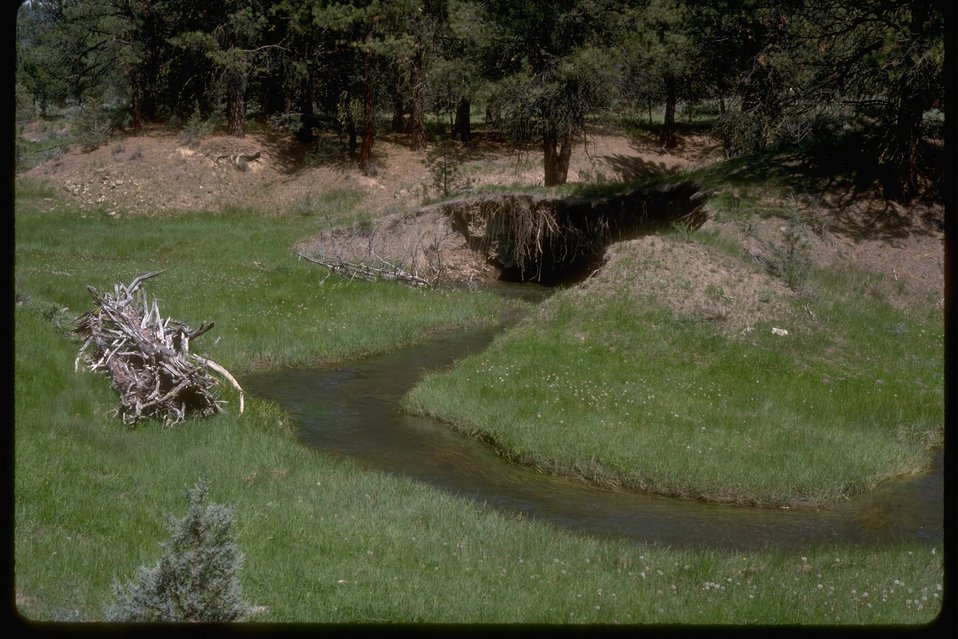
Stream meander properly functioning in central Oregon.